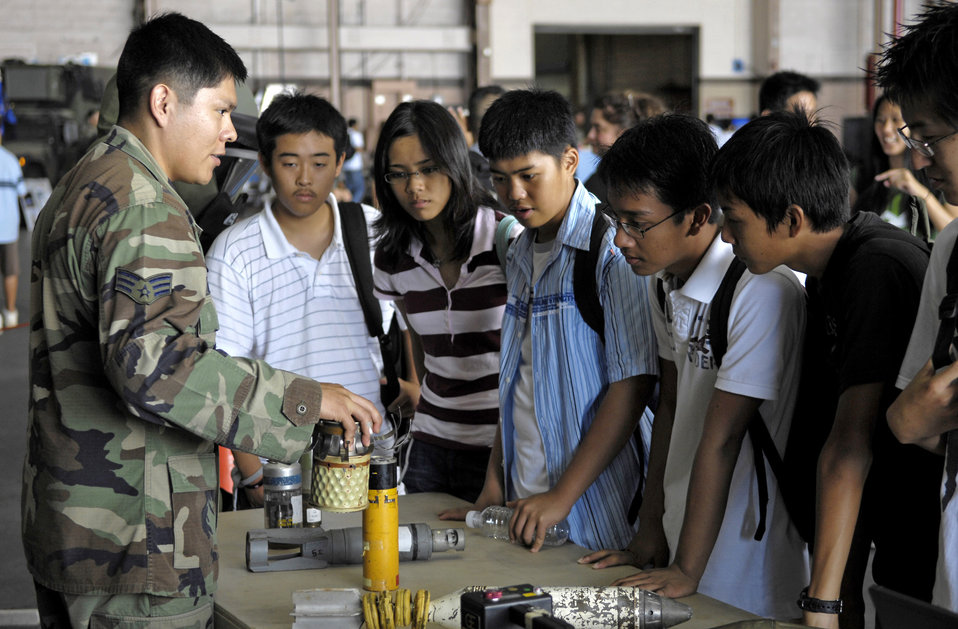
Hickam hosts Education Day

Senior Airman Ryan Ortiz talks to students Sept. 13 at Hickam Air Force Base, Hawaii, during Air Force Education Day. Members of 13th Air Force hosted the day for Hawaii public school math and science students as part of Air Force Week Honolulu. Airman Ortiz is an explosive ordnance disposal technician.